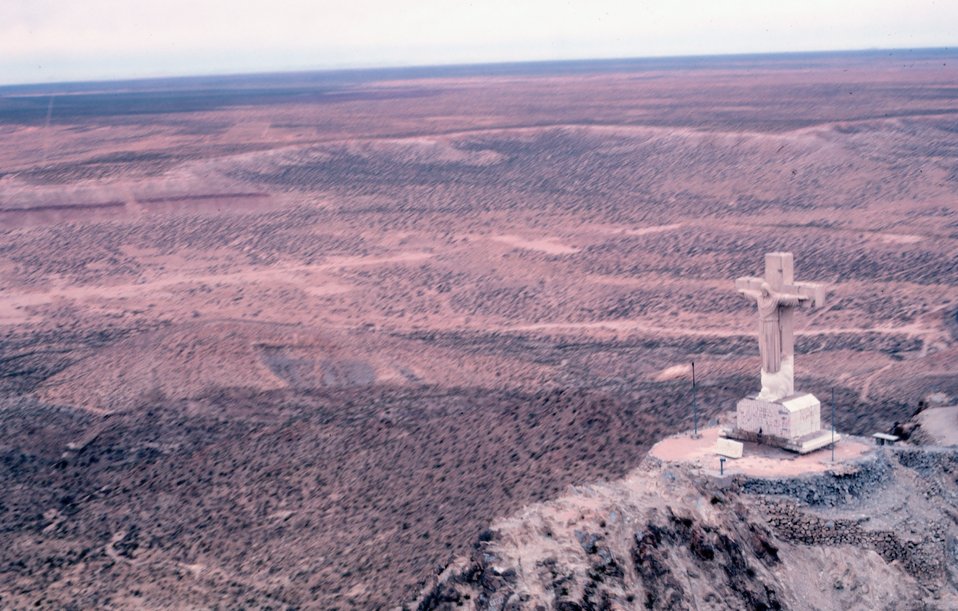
Statue of Christ the King along I-10 at Sunland Park, New Mexico. This statue was made by the sculptor Urbici Soler for the congregration of the San Jose del Rio Church at Smeltertown, New Mexico in 1939. Picture taken while ferrying helicopter cross-country.